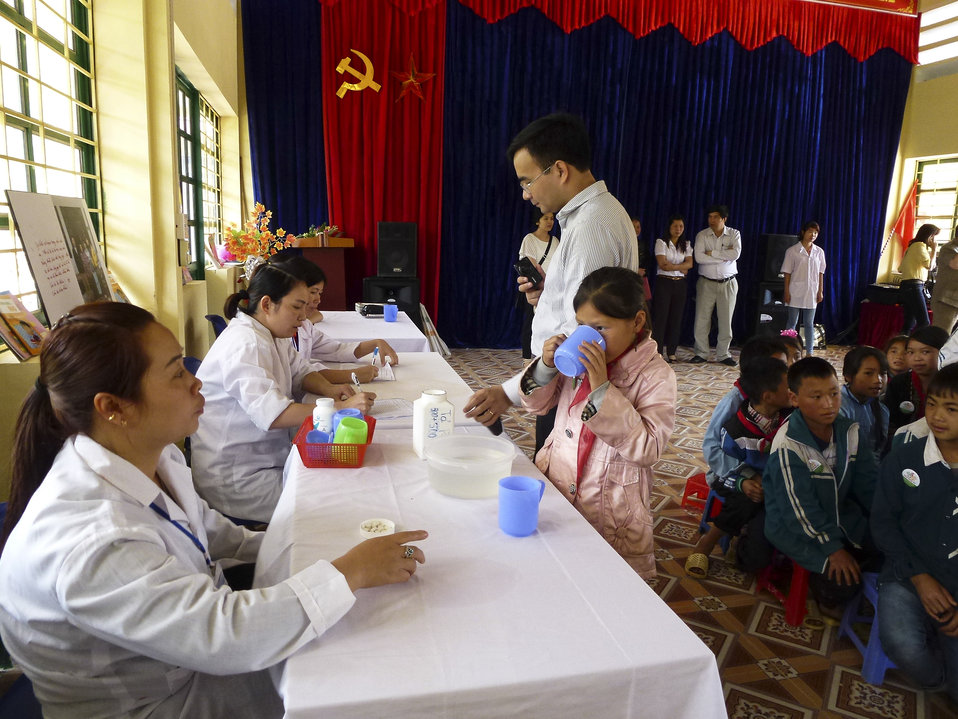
USAID supports deworming medication for school children in Sa Pa district of Lao Cai province

May 13, 2014.